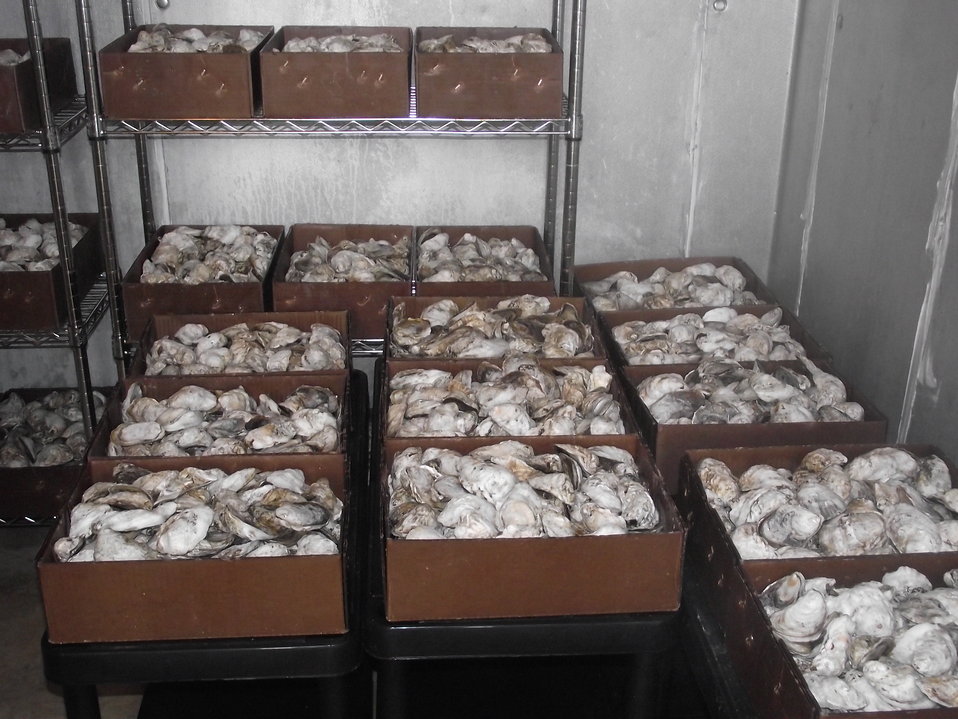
It takes approximately 2 years to harvest an oyster from seed to consumption. Ready for sale oysters are boxed in lots of 100 for shipment to market. The U.S. Department of Agriculture’s (USDA) Rural Development (RD) agency announced funding support for the Chesapeake Bay Oyster. True Chesapeake Oyster Company will use the funding to support shoreline restoration and repair an existing pier at its oyster growing operation in St. Jerome Creek.